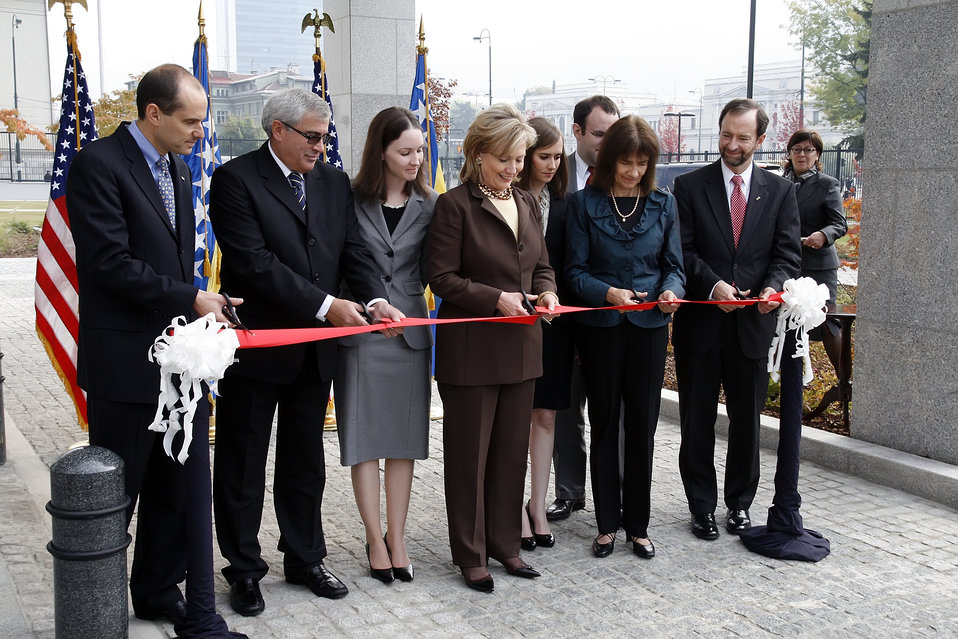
Secretary Clinton Participates in a Ribbon-Cutting Ceremony

U.S. Secretary of State Hillary Rodham Clinton (center) participates in a ribbon-cutting ceremony for the new embassy compound in Sarajevo, Bosnia and Herzegovina, on October 12, 2010.